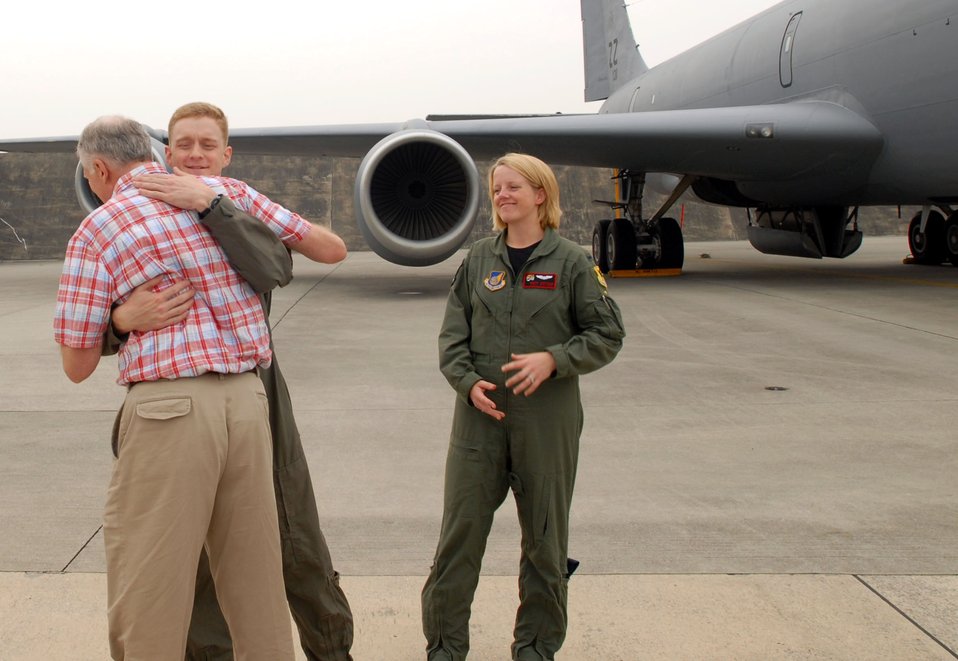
Kadena school teacher thanks his military medical heroes

Jim Brierly hugs Capt. Dan Bradford as 1st Lt. Marta Lofthouse looks on May 2 at Kadena Air Base, Japan. Captain Bradford and Lieutenant Lofthouse were the pilots who flew the KC-135 Stratotanker that medically evacuated Mr. Brierly to Hawaii after he suffered a major heart attack March 30, 2006. Mr. Brierly and his wife, Marite, visited the units to thank them for their efforts. Mr. Brierly is a English as a second language teacher at Kadena Elementary School here. Both officers are with the 909th Air Refueling Squadron.